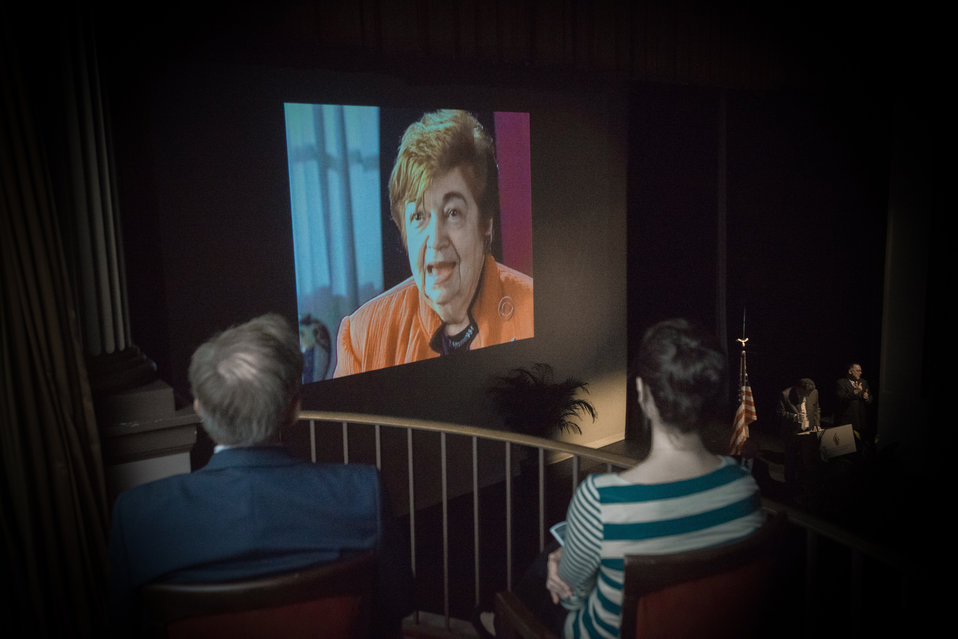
A clip of the CBS News program – 60 Minutes – ‘The Nazi Deception,’ is shown during the 2013 Federal Inter-Agency Holocaust Remembrance Day, at the Lincoln Theater, on Wednesday, April 17, 2013, in Washington, D.C. The German wartime propaganda film shows model camp conditions and activities at Theresienstadt Concentration Camp. Highlighted in the film was a children’s play ‘Brundibar’ which one of today’s speakers, Czech Jewish Holocaust Survivor Ela Stein-Weissberger. The clip showed her playing a cat in the wartime film and more recently in the ’60 Minutes’ interview shown to the audience. Since the 1979 President’s Commission on the Holocaust, an annual proclamation signed by the President of the United States recognizes the importance of remembering the atrocities of the Holocaust that should never be forgotten or be ignored.